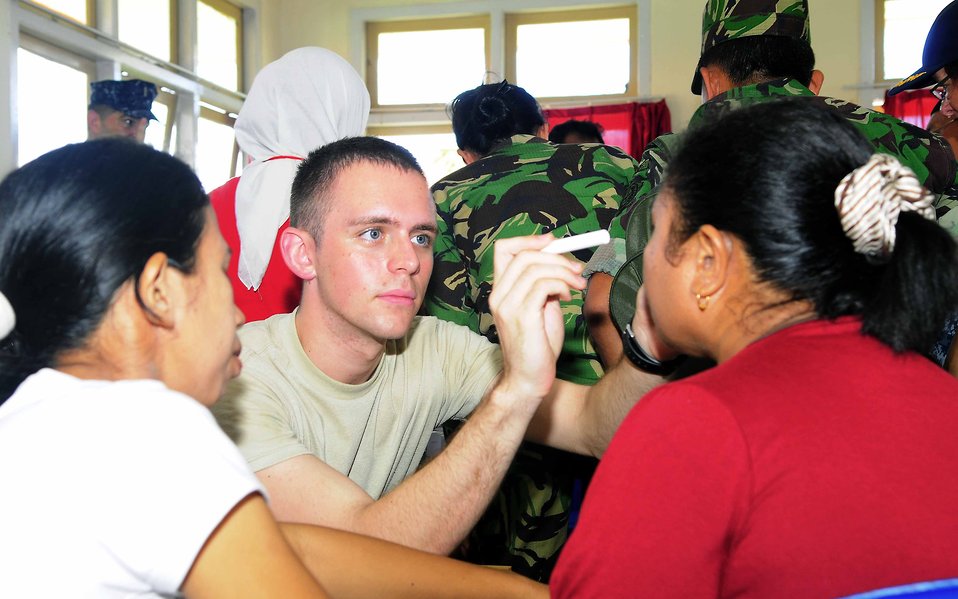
Army Spc. Lemoine Examines an Indonesian Medical Patient’s Eyes

Army Spc. Jacob Lemoine, deployed with the Military Sealift Command hospital ship USNS Mercy (T-AH 19), examines an Indonesian medical patient’s eyes during a medical civic action program on July 23, 2010, in Ternate, Indonesia. Pacific Partnership 2010 is the fifth in a series of annual U.S. Pacific Fleet endeavors conducted in Indonesia as a disaster relief exercise aimed at strengthening regional partnerships.